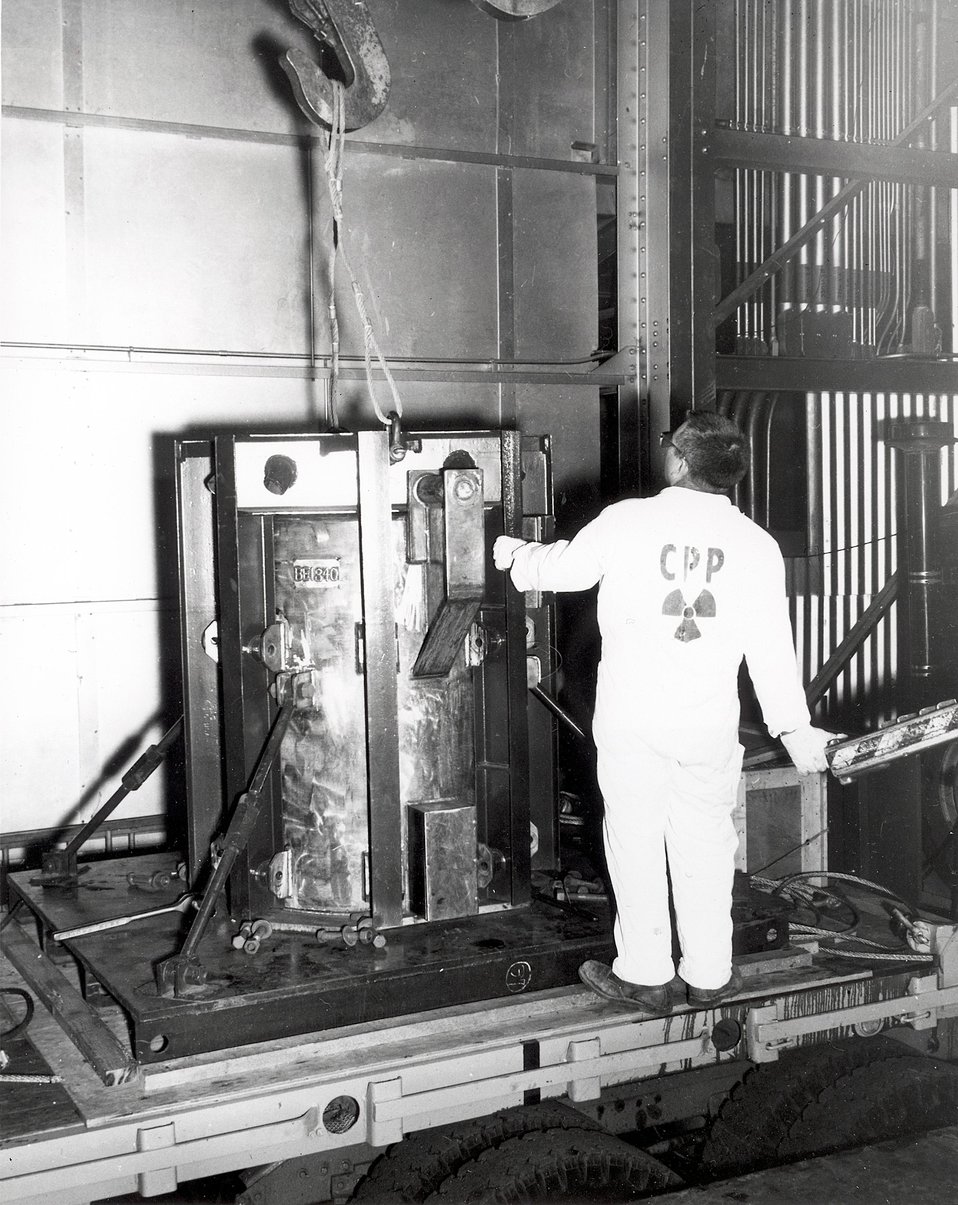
A technician prepares to raise a steel cage which protects and helps hold in place a heavy steel shipping cask during transport of spent reactor fluids to a storage facility.